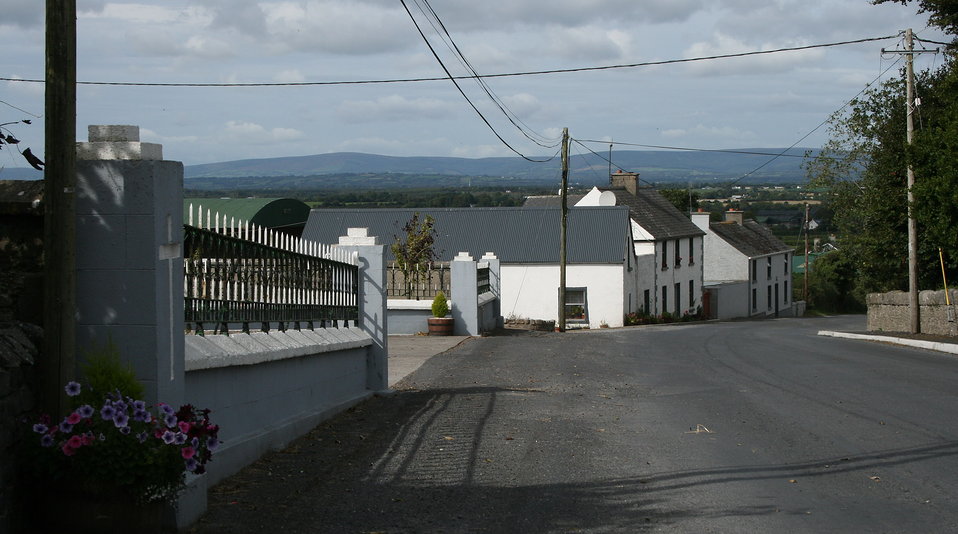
Raheen, County Laois, Ireland